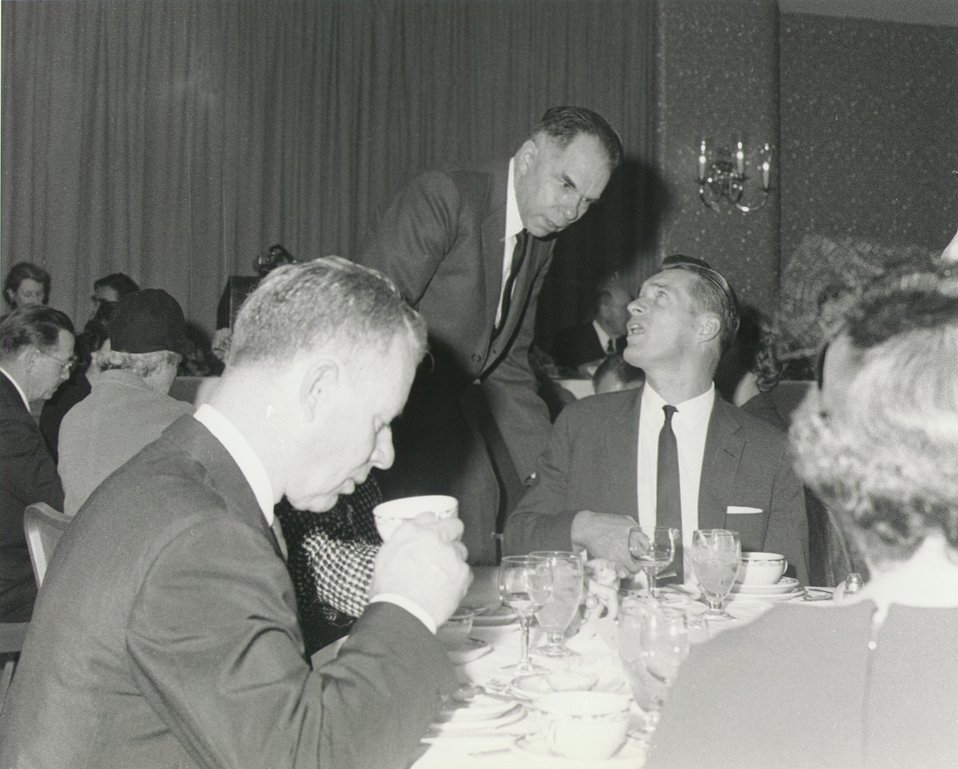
Fermi Award Ceremony for Teller in 1962.